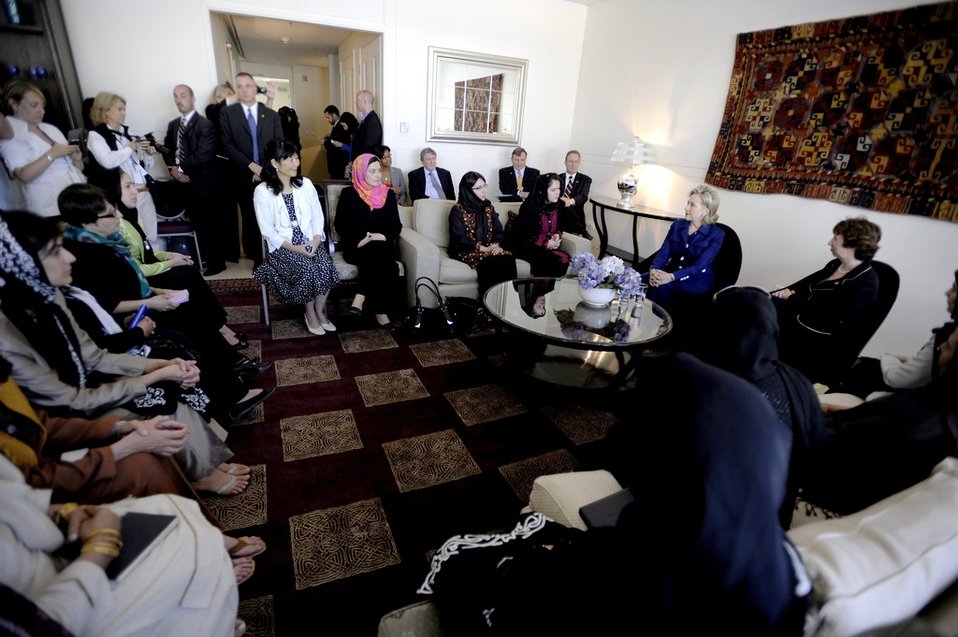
Secretary Clinton Participates in a Women’s Empowerment Event

U.S. Secretary of State Hillary Rodham Clinton participates in a women’s empowerment event hosted by EU High Representative for Foreign Policy Catherine Ashton in Kabul, Afghanistan, on July 20, 2010.